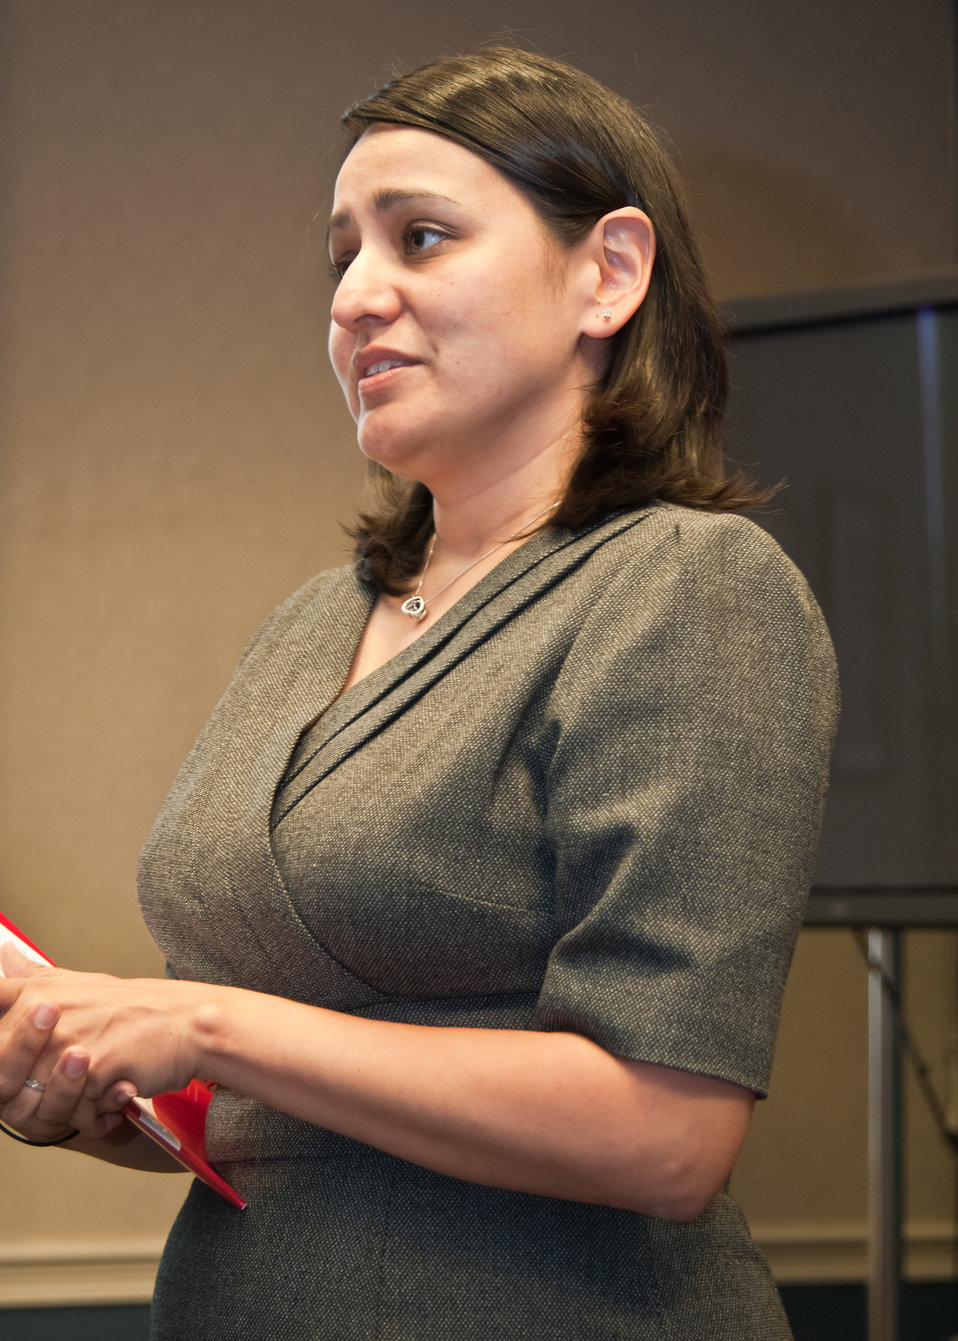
Hispanic Serving Institutions National Program Manager Sandra Cortez offers feedback after the morning session to United States Department of Agriculture (USDA) Hispanic Association of Colleges and University (HACU) and Tribal College summer interns during their orientation at USDA in Washington, DC, Monday, Jun. 6, 2011. The HACU/Tribal College National Internship Program represents more than 400 colleges and universities committed to higher education in the U.S., Puerto Rico, Latin America, Spain and Portugal and places student interns each year with federal agencies in Washington, DC or in field offices around the country.